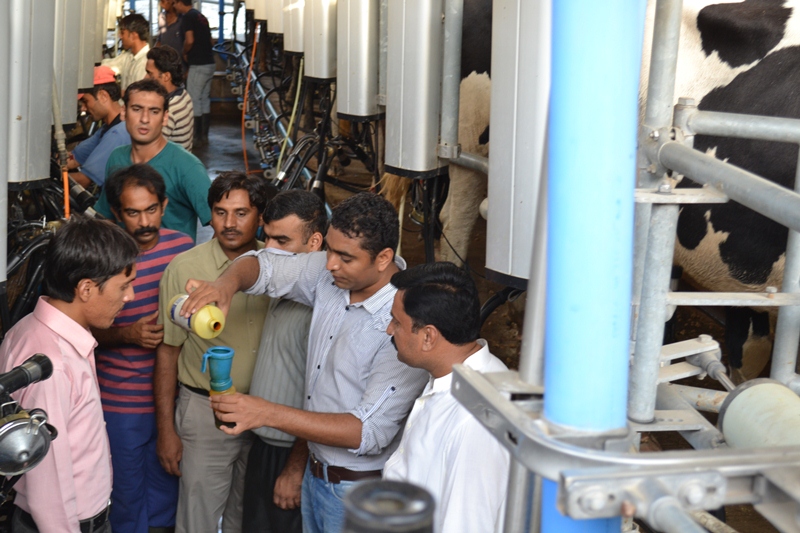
5 - First batch of Dairy Project farm manager trainees attending Farm Managers Training by USAId Dairy Project